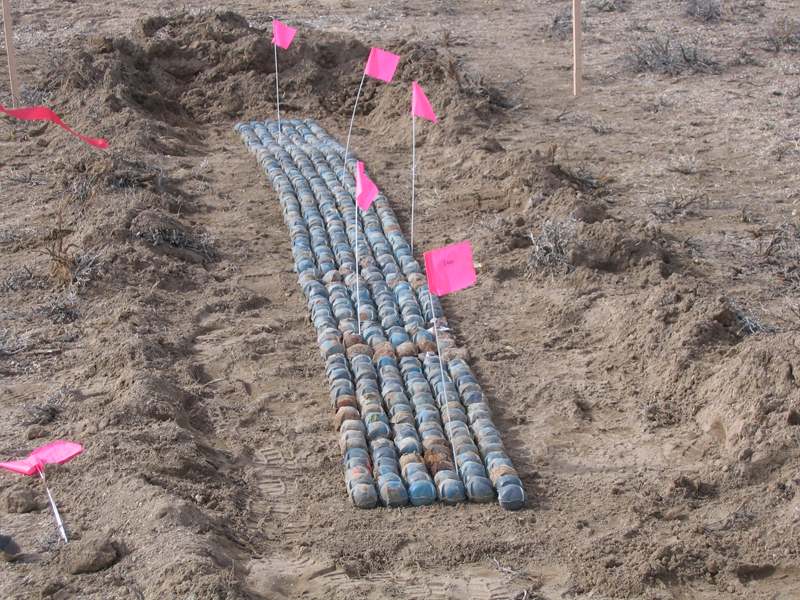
CAU 408 Bomblet Target Area, Flightline, Tonopah Test Range, NV

Pictured here is the accumulation area for bomblets on TTR prior to demolition. Pink flags mark every 100 bomblets.

Field crews from the Nevada Site Office environmental restoration contractor, Navarro-Intera, scoured the terrain using handheld metal detectors to locate baseball-sized bomblets or “submunitions” to a depth of 1 foot below the surface. The materials were retrieved and rendered safe by blasting them apart with explosives. They were then disposed in a landfill as inert munitions debris.

Tonopah Test Range, NV